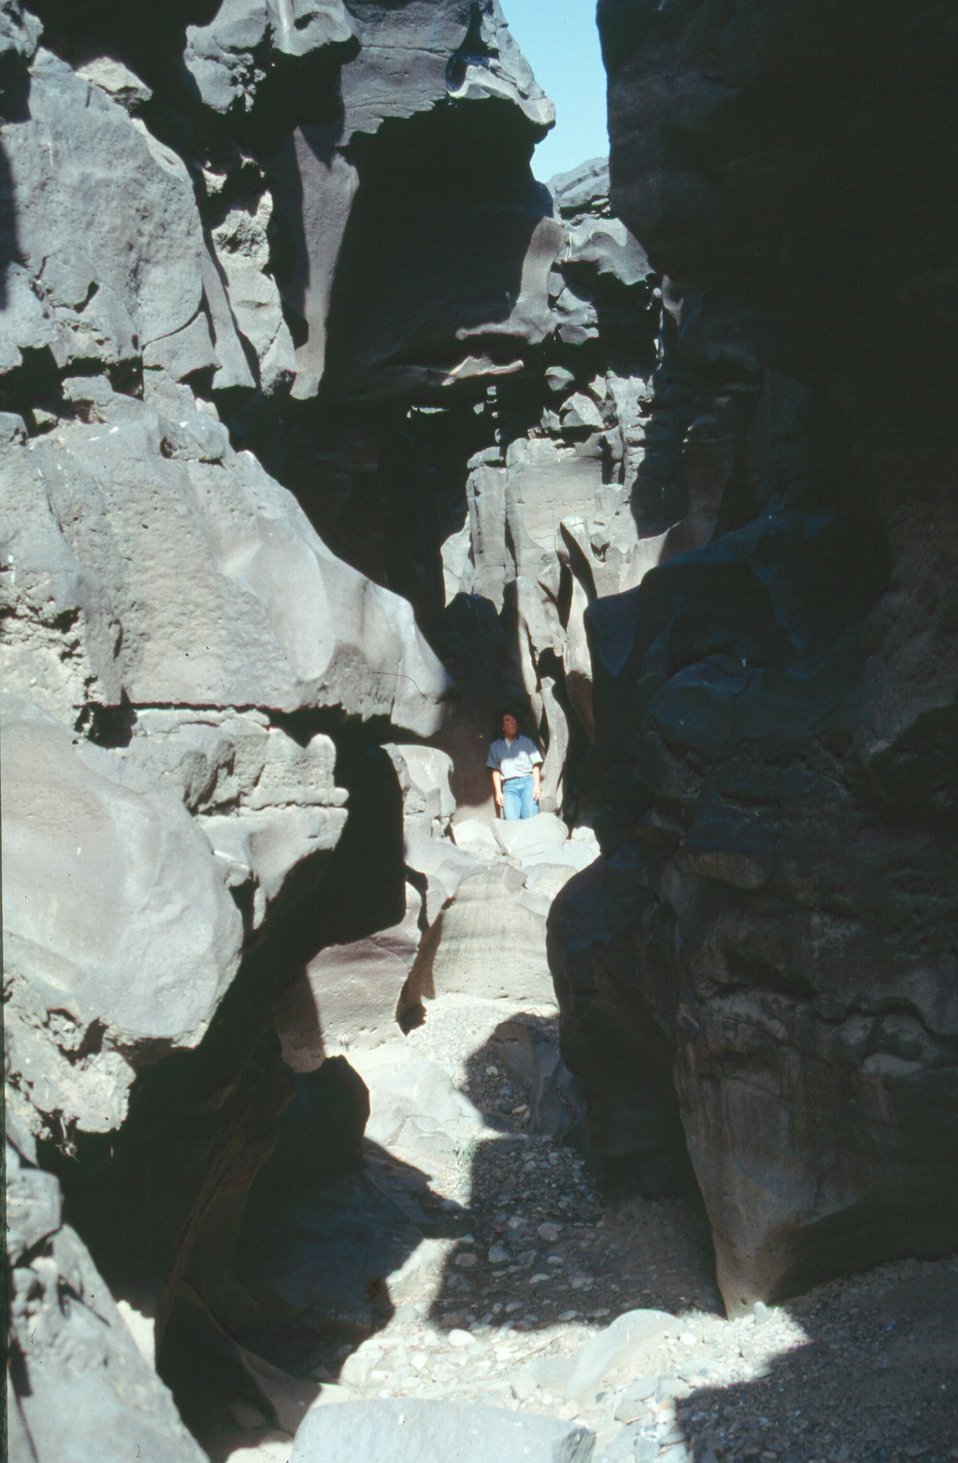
Canyon Shoshone Field Office USRD Upper Snake River District